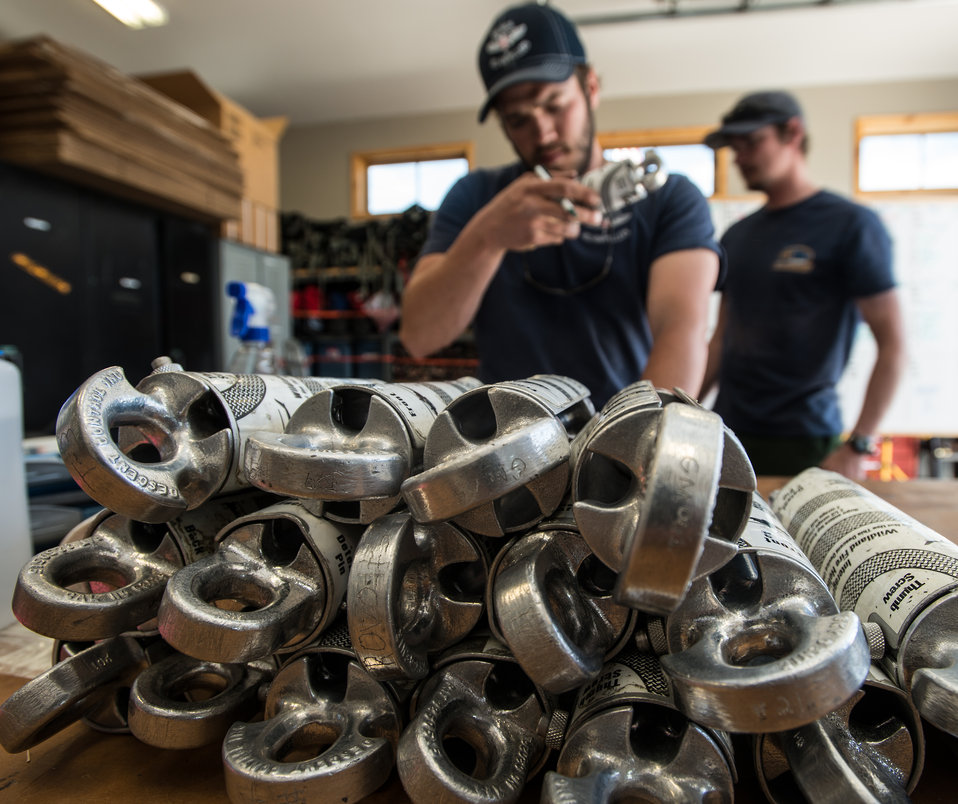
Sky Genie Decent Control System devices are cleaned, inspected and their use logged in record books on Wednesday, May 14, 2014, before being stored for the next class at the U.S. Department of Agriculture (USDA), U.S. Forest Service (USFS) National Helicopter Rappel Program’s Rappel Academy at Salmon Air Base in Salmon, ID. From May 12, 2014, 72 veteran rappellers from all over the nation, 30 support staff, and three helicopters with flight crews attend the training at Salmon Air Base. Participants will rappel into the Perreau Creek area. The annual training is delivered in accordance with the National Rappel Operations Guide; strengthen leadership, teamwork, and communications within the rappel community, and produces quality aerial delivered firefighters for use in fire and aviation operations. The USDA Forest Service National Helicopter Rappel Program’s primary mission is initial attack. Rappel crews may be utilized for large fire support, all hazard incident operations, and resource management objectives.